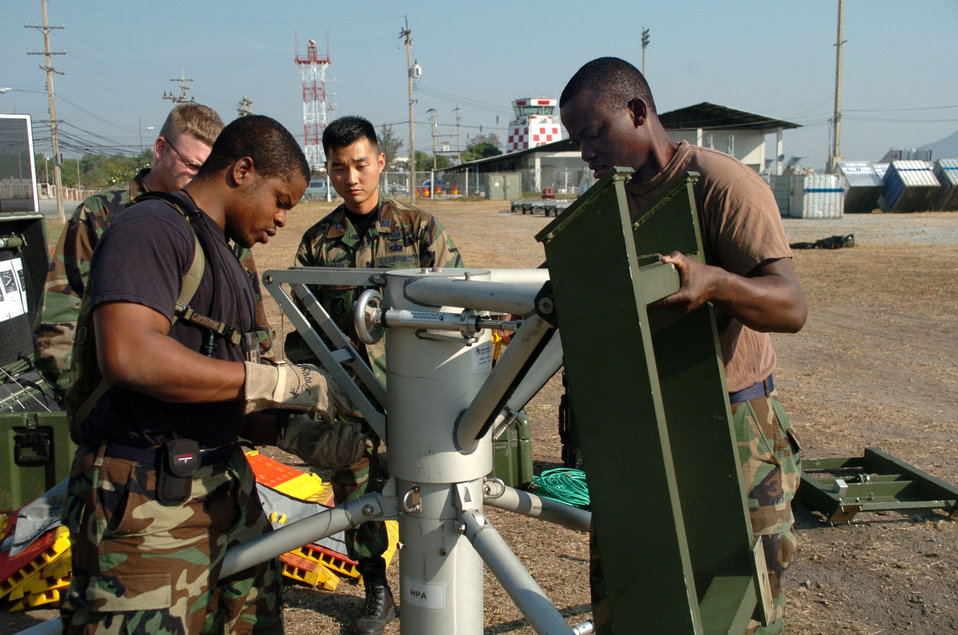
Making the connection

UTAPAO, Thailand -- Airmen start to set up communications equipment here Jan. 6. The equipment provides deployed Airmen secure and nonsecure Internet connections and access to military telephone lines. The Airmen are deployed from the 18th Communications Squadron at Kadena Air Base, Japan. They are supporting the international tsunami relief efforts in the region where nearly 150,000 people are confirmed dead.